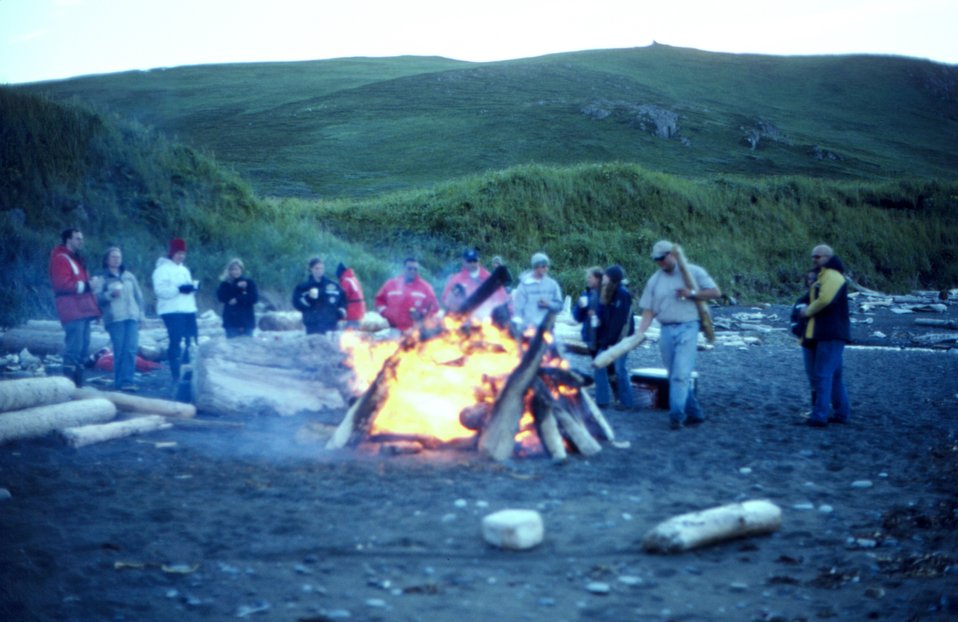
NOAA Ship RAINIER crew beach party at Chowiet Island in the Semidi Island group southwest of Kodiak Island.